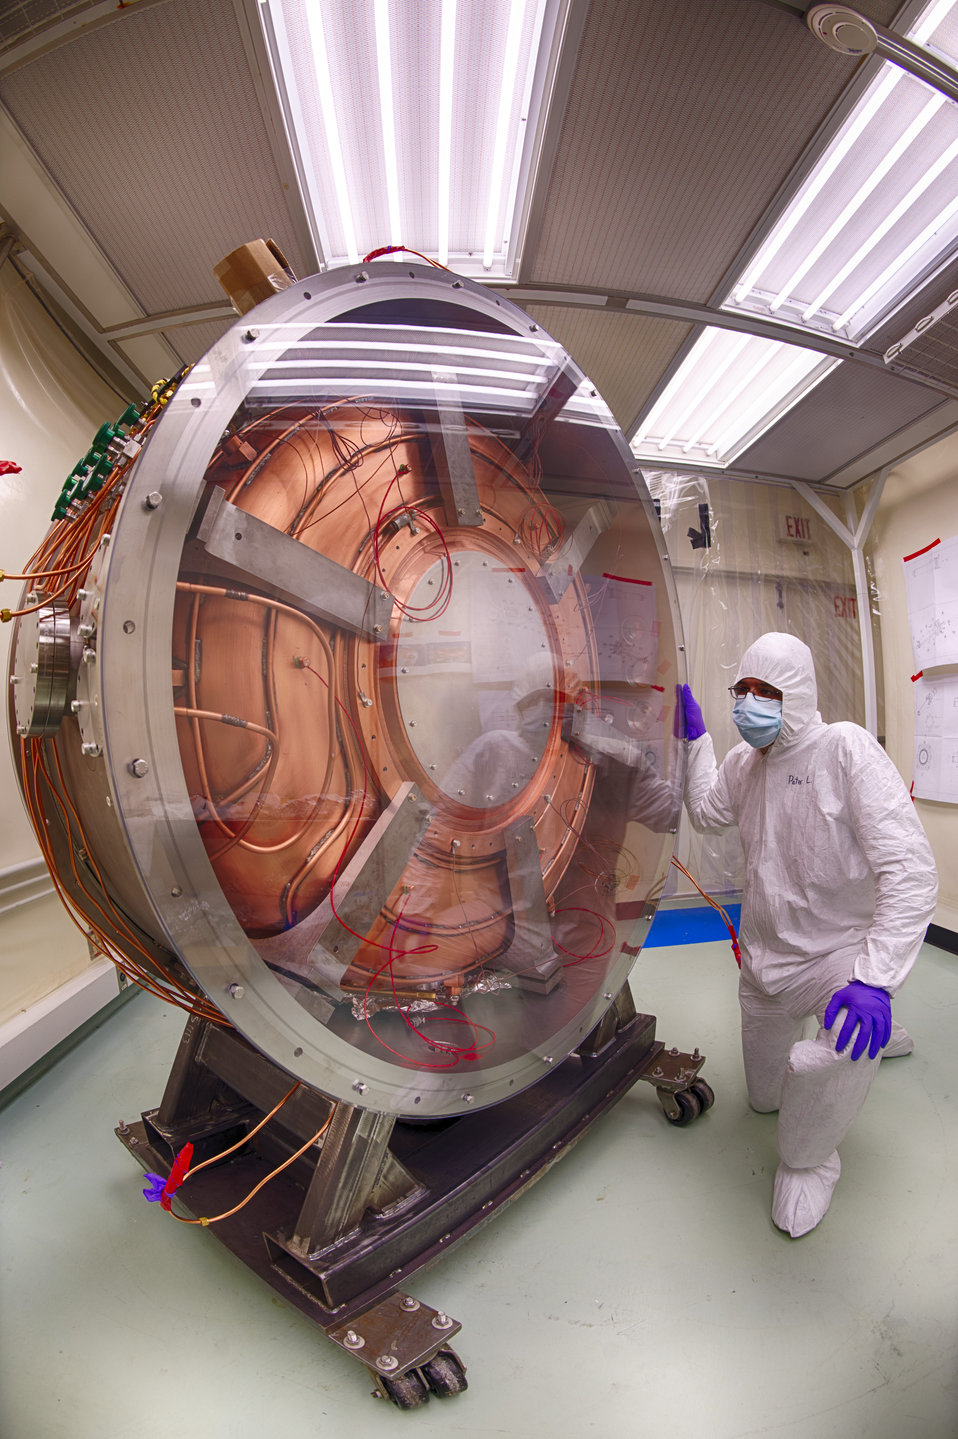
MICE SINGLE CAVITY TEST STAND AT LAB 6 AT THE FERMI NATIONAL ACCELERATOR LABORATORY.